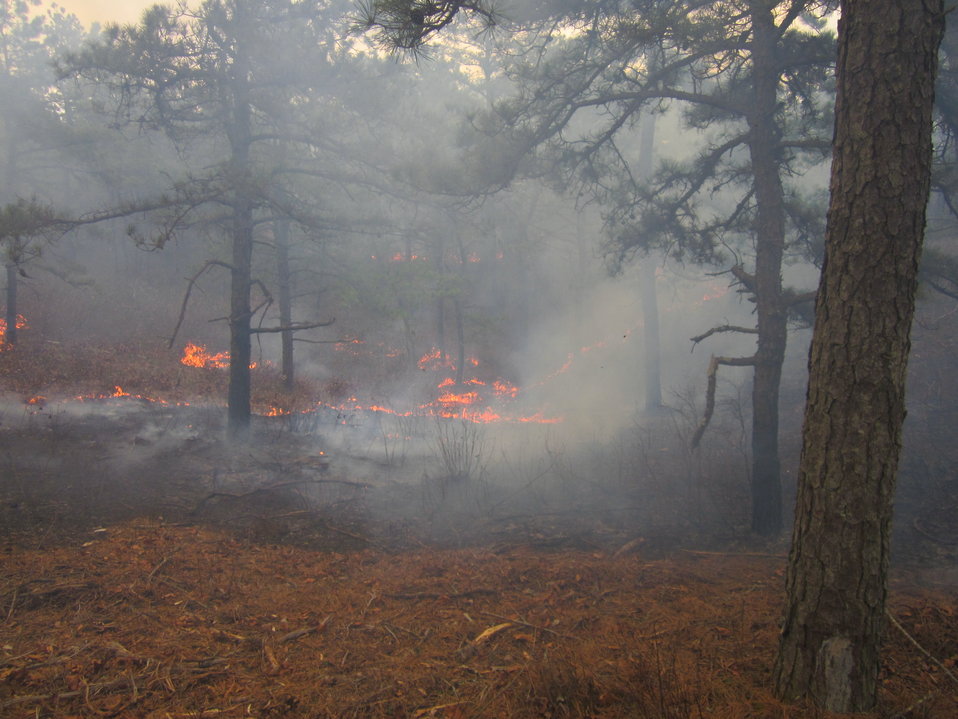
Cape Cod Controlled Burn

Mashpee, Massachusetts, April 5, 2012. A controlled burn burns in pitch pines at the Town of Mashpee Holland Hill Barrens area of Mashpee National Wildlife Refuge. The burn cleared overgrown brush under fire-resistant pitch pine trees, which will reduce fire risk to neighboring homes. It will also stimulate growth of oak stems, important for the rare New England cottontail. The burn was conducted by the Town of Mashpee, U.S. Fish and Wildlife Service, State of Massachusetts Department of Conservation and Recreation, and Northeast Forest and Fire Management.